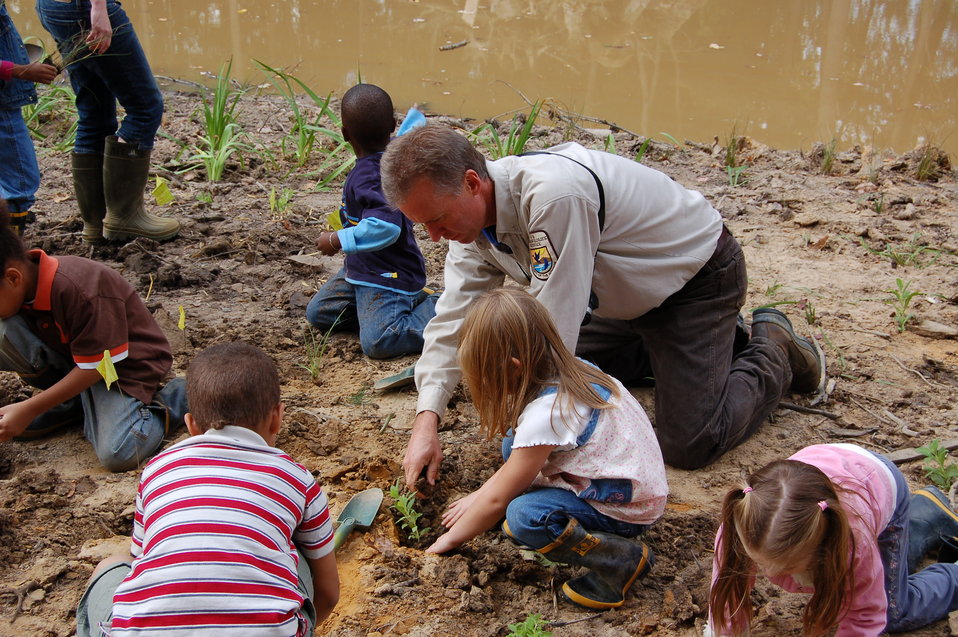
Planting a schoolyard wetland

Biologist Rich Mason helps students plant a schoolyard wetland.